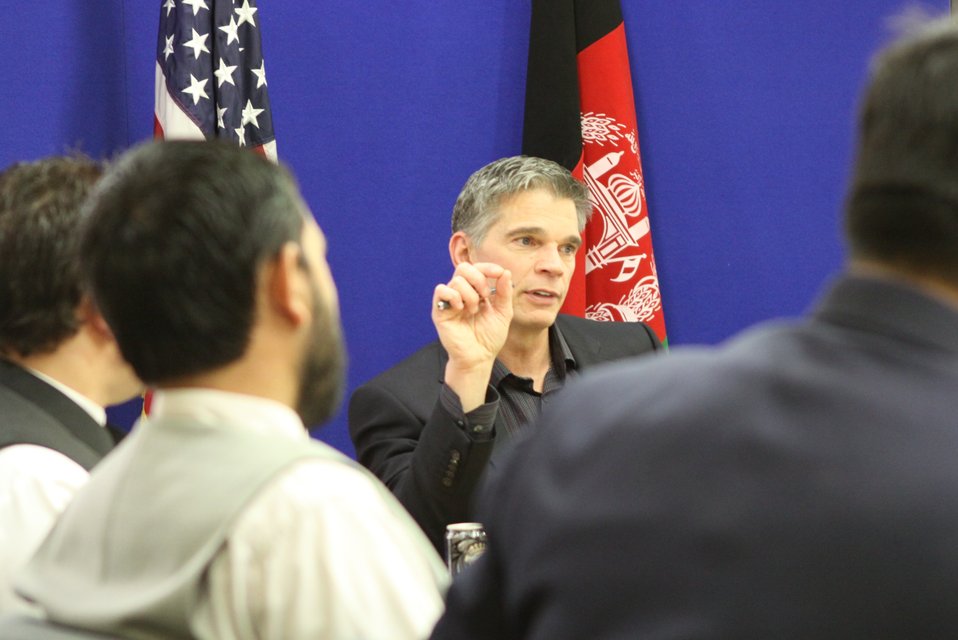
USAID Mission Director Earl Gast Conducts a Media Roundtable with Afghan Media, March 17, 2011